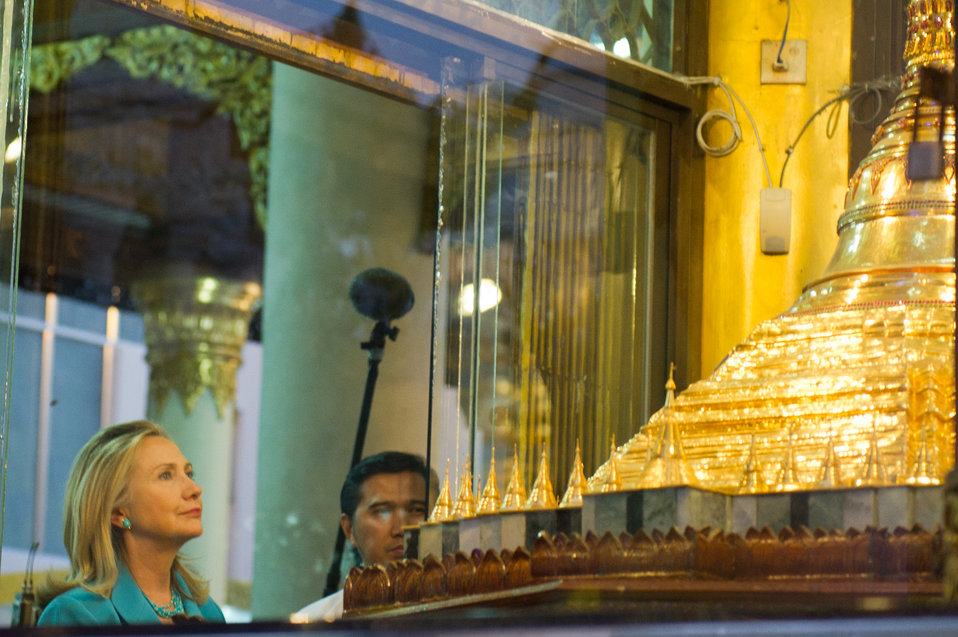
Secretary Clinton Visits the Shwedagon Pagoda

U.S. Secretary of State Hillary Rodham Clinton visits the Shwedagon Pagoda in Rangoon, Burma, on December 1, 2011.